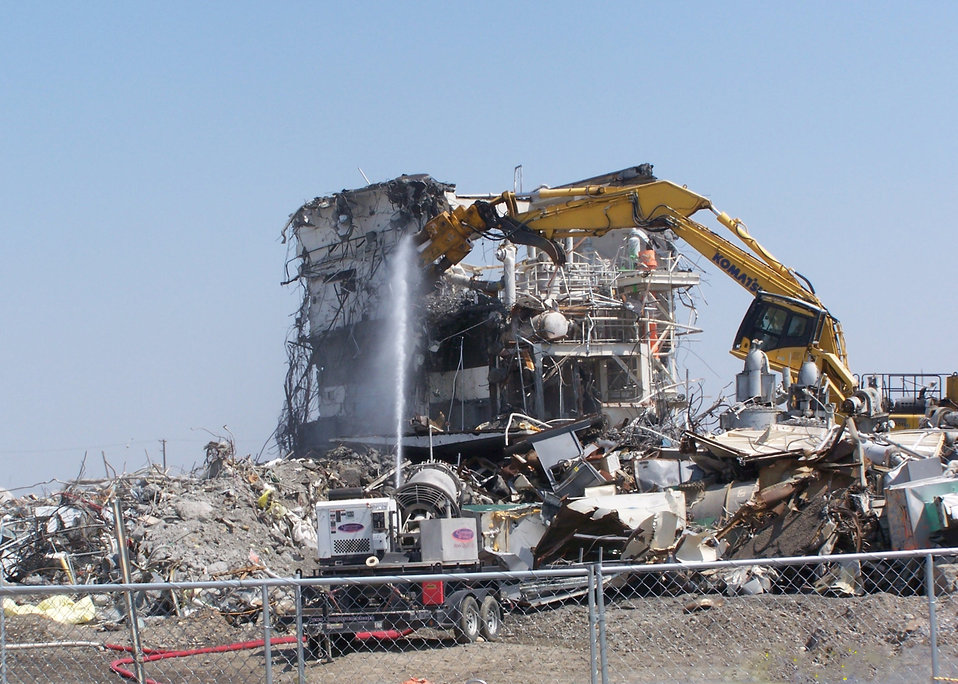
Progress at Hanford Site

As of late September 2010, the Richland Operations Office had spent more than $725 million of its Recovery Act allocation since launching work in April 2009, and progress in cleanup projects has been swift.
Workers have demolished 30 facilities, remediated 23 waste sites, and installed more than 250 wells for monitoring and treating groundwater. They’ve excavated 3.3 million cubic yards of soil for two new disposal cells that will increase capacity at the Environmental Restoration Disposal Facility by 50 percent, to 16.4 million tons of waste. In addition, workers have built a new groundwater treatment facility next to the Columbia River, and they’ve retrieved and treated hundreds of cubic meters of contaminated solid waste.